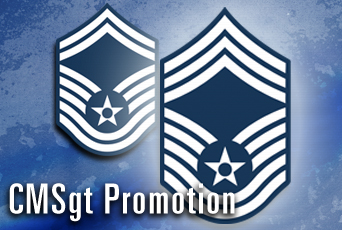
Air Force releases chief master sergeant list